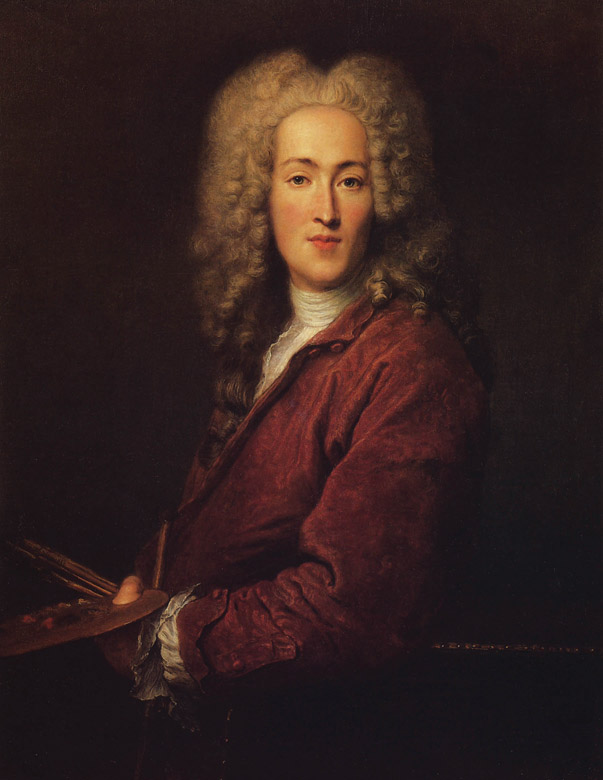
Nicolas Lancret